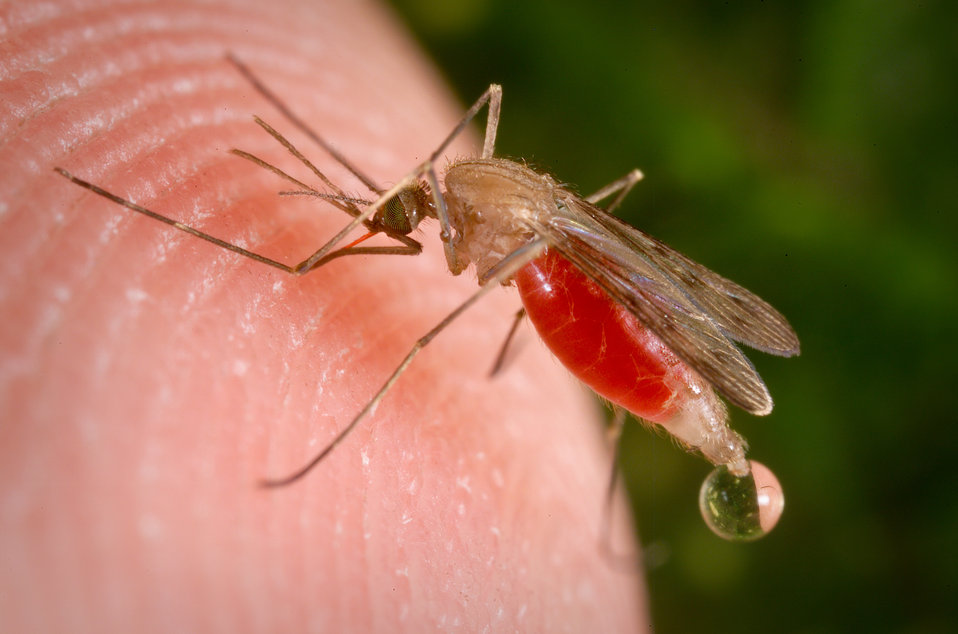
This female Anopheles freeborni is taking a blood meal from a human host by pumping the ingested blood through her 'labrum', which is visible here as a thin red, 'needle-like' structure between the mosquito's head and the host's skin.